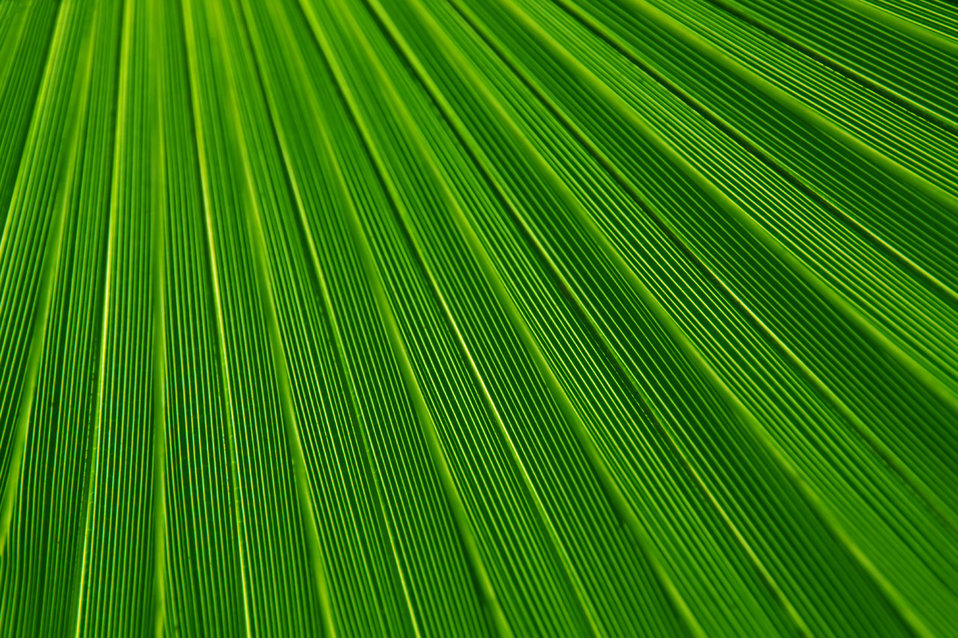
Palm leaf texture

Green palm tree leaf texture.